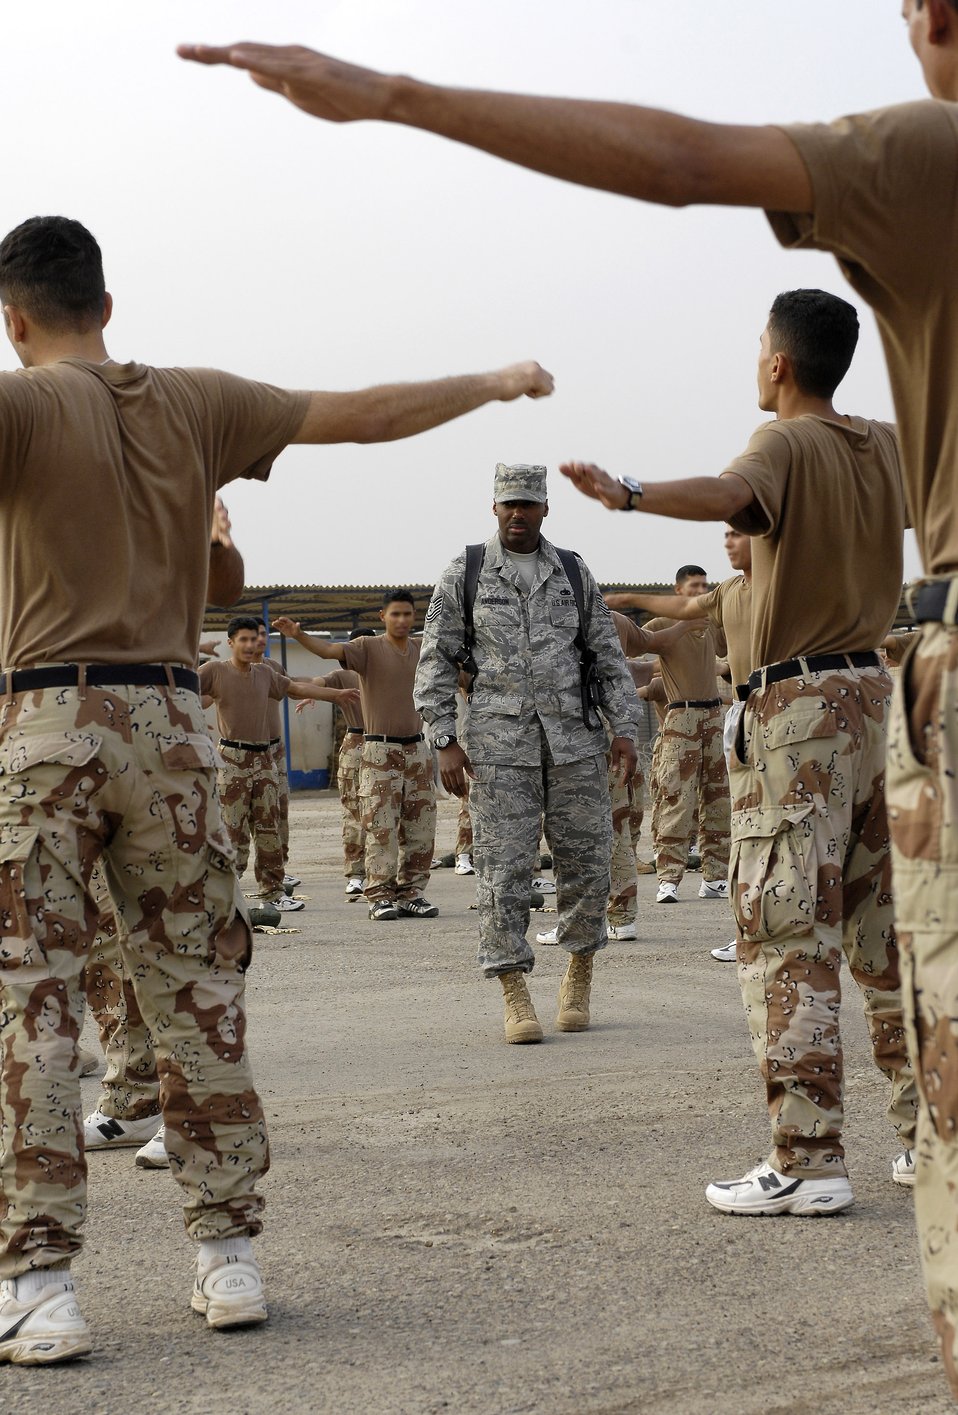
Basic training instructors help mold Iraq's future leaders

Tech. Sgt. Lamar Anderson observes Iraqi air force warrant officer trainees warming up before a 30 minute self-paced run. Sergeant Anderson is a military training instructor from Lackland Air Force Base, Texas, and is assigned to the 370th Expeditionary Training Squadron at Taji Air Base, Iraq. The Lackland AFB MTIs are helping to mold Iraq's future leaders.